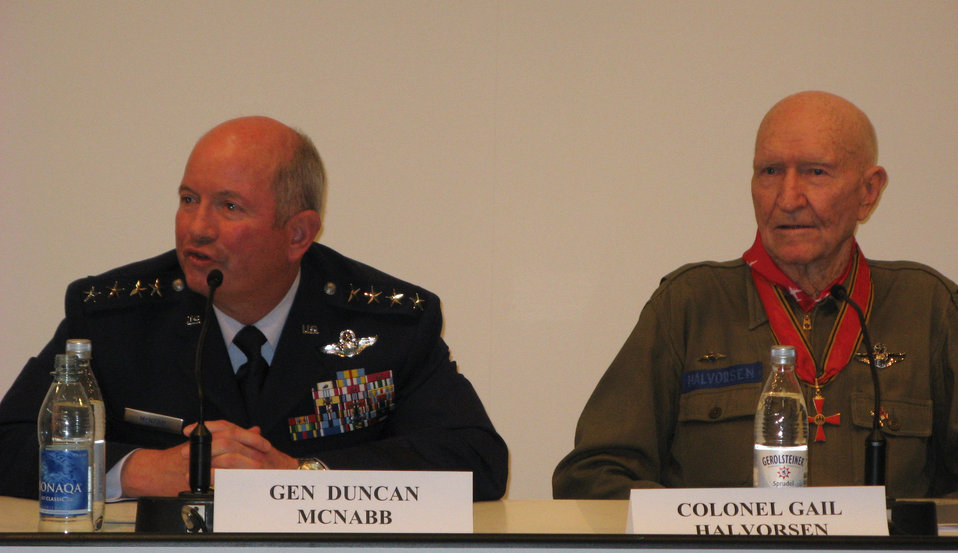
60th Anniversary of the Berlin Airlift

Gen. Duncan J. McNabb, Air Force vice chief of staff, and retired Col. Gail Halvorsen, the famed Berlin Airlift candy bomber, participate in a panel discussion in Berlin May 27 commemorating the 60th anniversary of the Berlin Airlift.